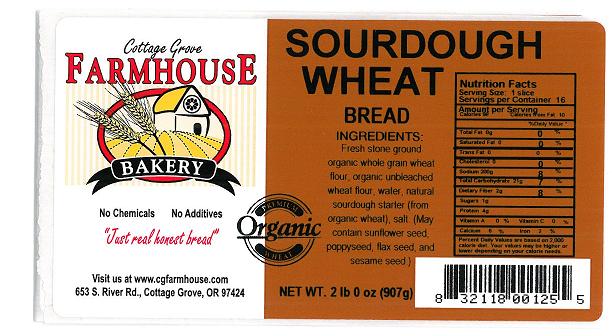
RECALLED - Bread

April 1, 2011 - Product Recall - Cottage Grove Farmhouse Bakery Issues Allergy Alert On Undeclared Pasteurized Egg White In Breads.